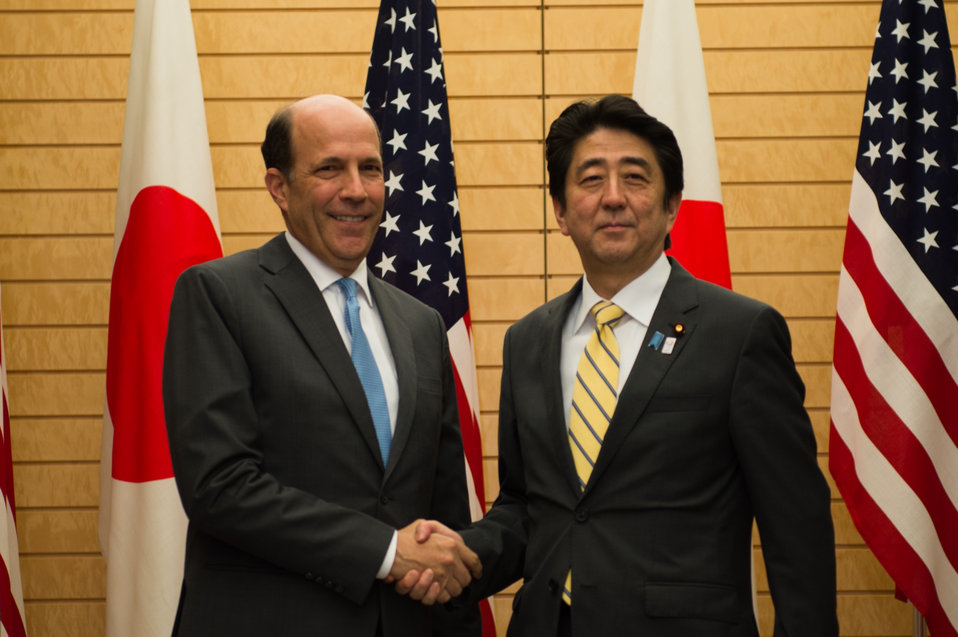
Ambassador Roos with Prime Minister Abe at the Joint Press Announcement of the Okinawa Consolidation Plan

U.S. Ambassador to Japan John V. Roos shakes hands with Japanese Prime Minister Shinzo Abe at the joint press announcement of the Okinawa Consolidation Plan in Tokyo, Japan, on April 5, 2013.